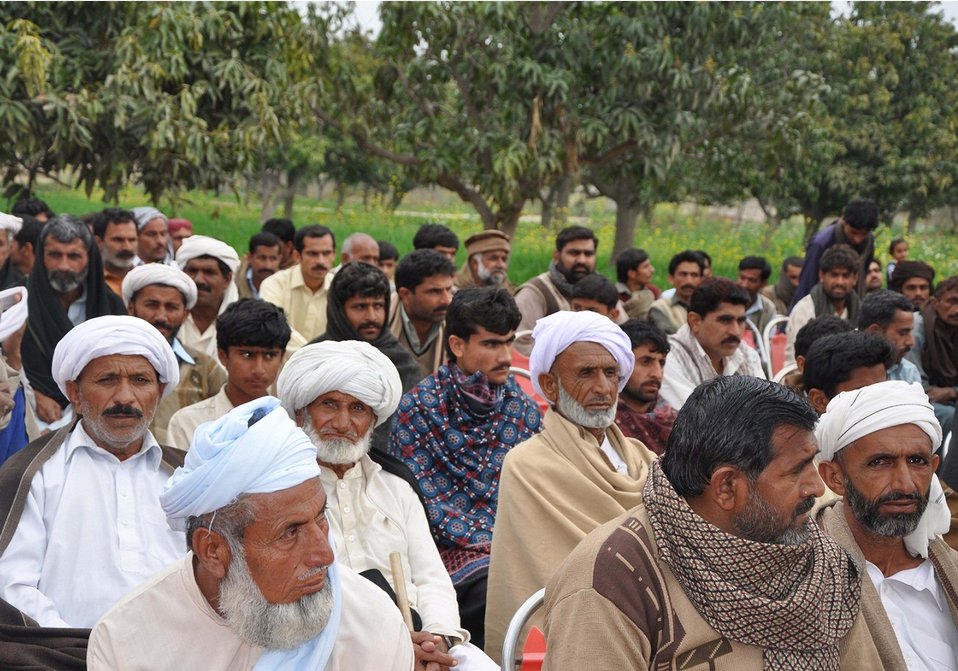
USAID educates MEPCO Farmers

Interactive sessions for MEPCO’s farming community which saw active participation by over 1,000 farmers were held by USAID Power Distribution Program. The sessions highlighted the roles and functions of MEPCO as an electric distribution company, and elucidated various energy conservation practices that can be adopted in everyday life by households in rural areas. Special emphasis was placed on the use of efficient tubewell motors and how they can save electricity and lower electric bills.

“On behalf of my entire village, I warmly welcome and thank all Multan Electric Supply Company (MEPCO) officials for organizing an energy conservation seminar in our village. This is an important step taken by MEPCO and we hope that through the discussed practices, we will conserve energy and reduce our electricity bills.”
Farmer, District Muzzafargarh
Saif-Ullah